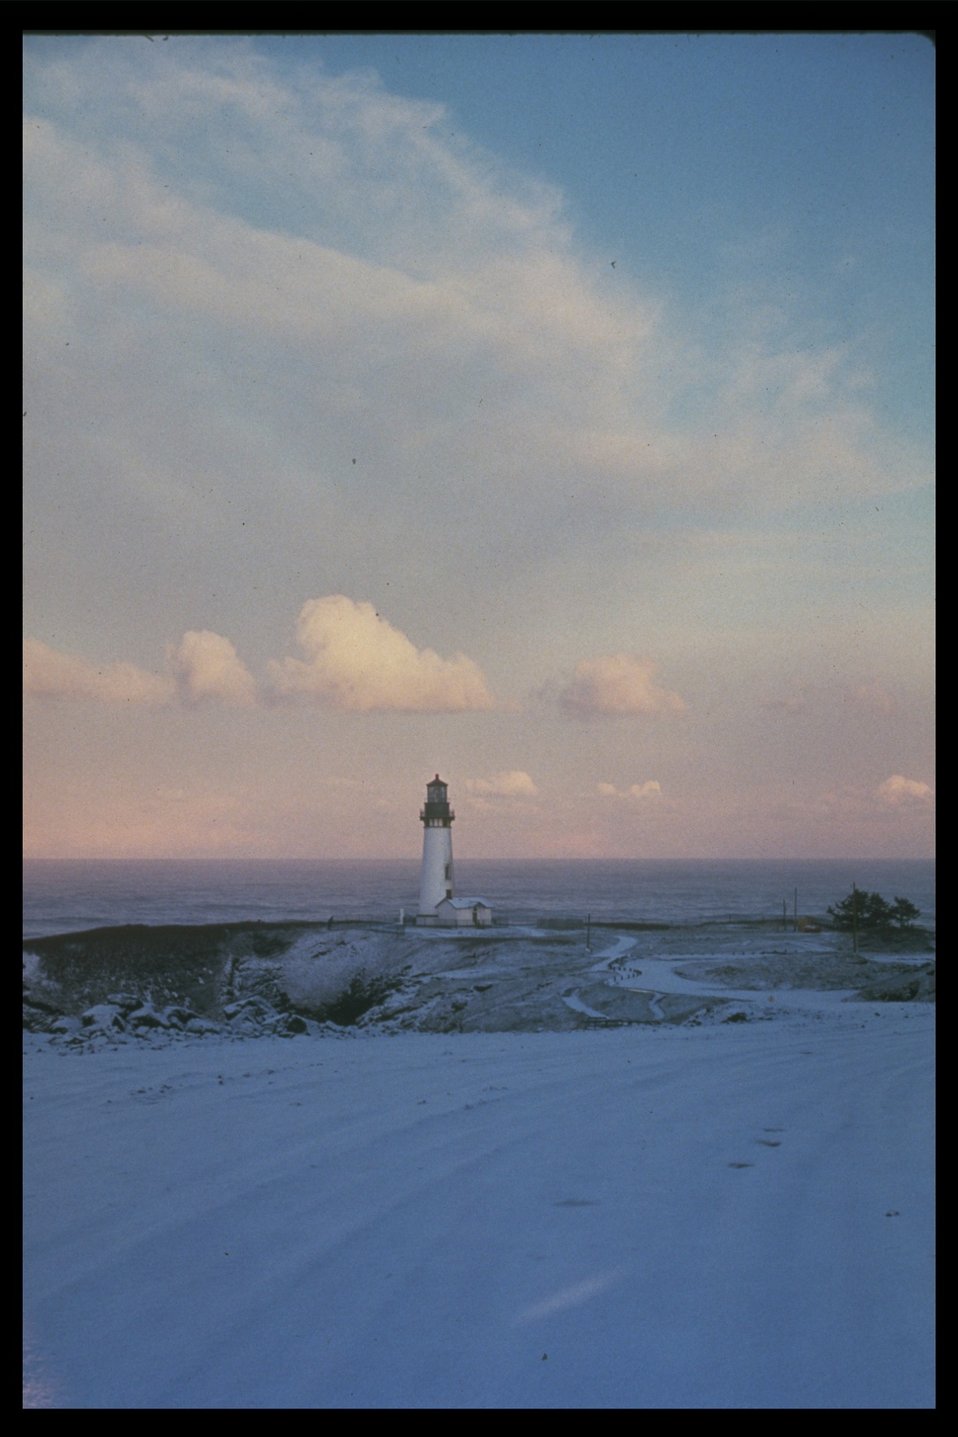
Snow at Yaquina Head Lighthouse.